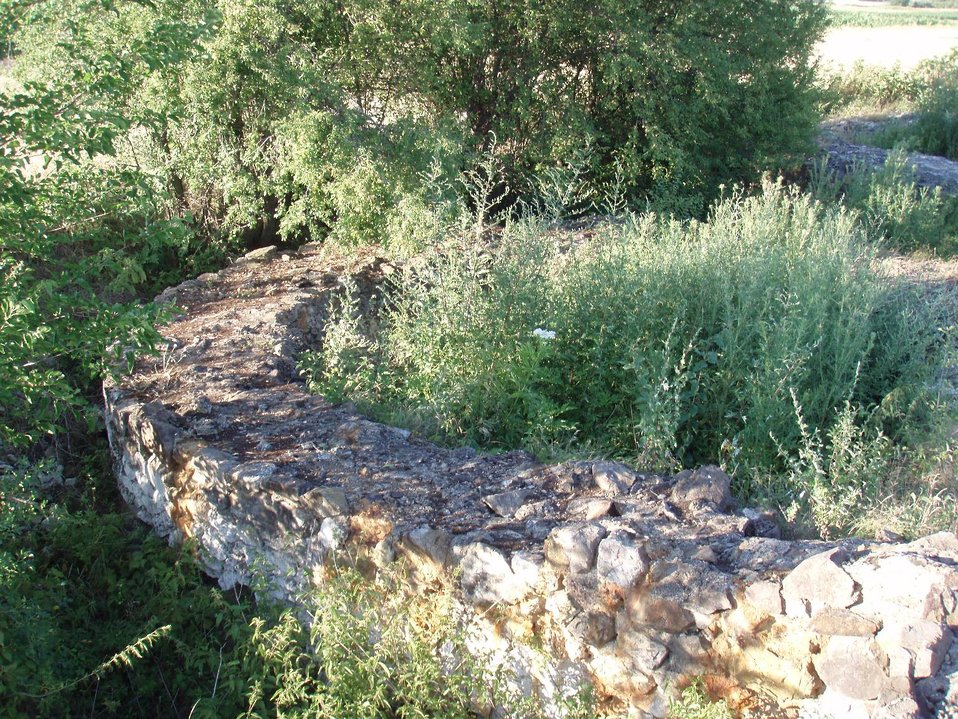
Wall at the excavation site of the ancient Roman town Ulpiana (Serbia)